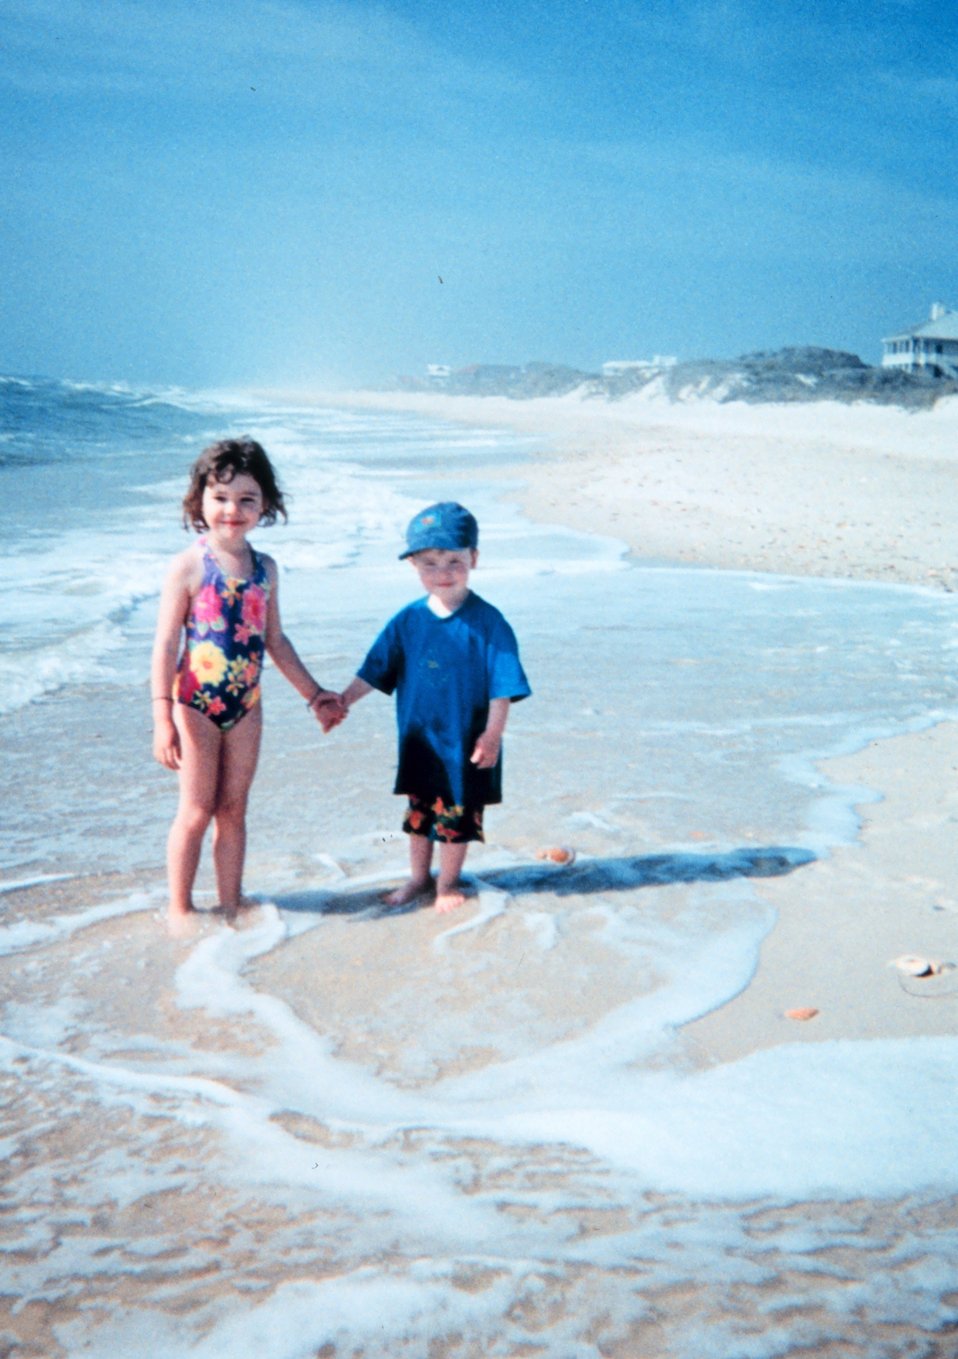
Sun, sand, surf, and happy children - what a great beach!